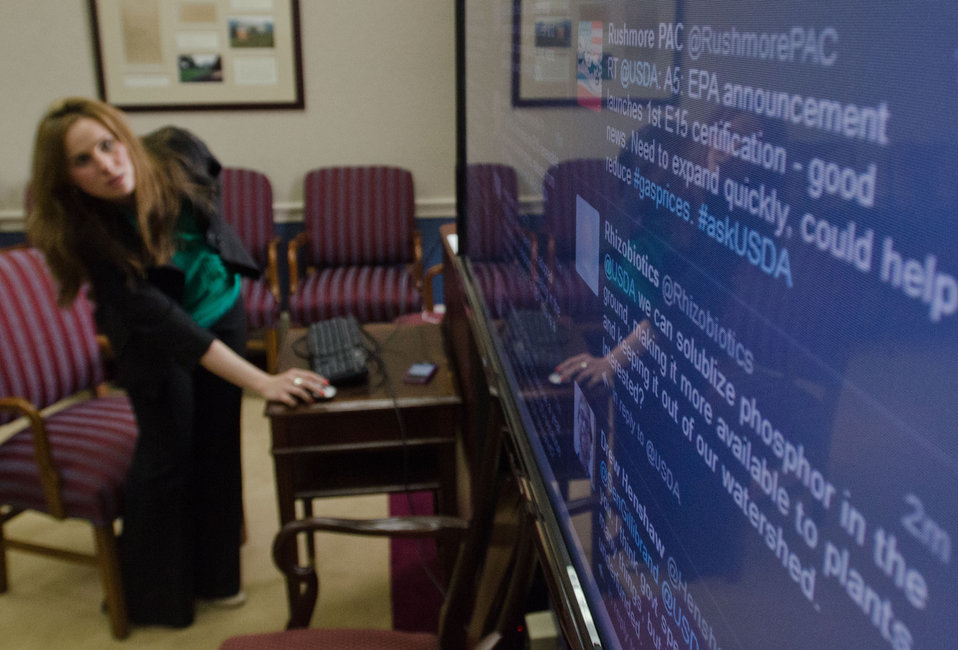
Agriculture Office of Communications, Director of Web Communications Amanda Eamich types responses for Agriculture Secretary Tom Vilsack, during the first Virtual Office hours live 'Twitter' session held at the U.S. Department of Agriculture in Washington, D.C., on Thursday, April 4, 2012.